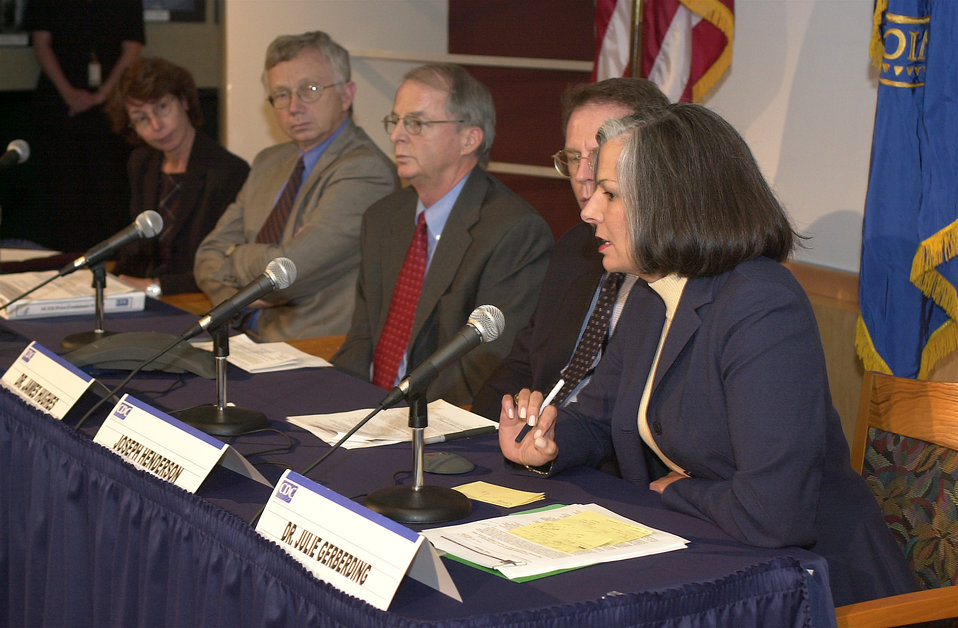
Centers for Disease Control and Prevention Bioterrorism Preparedness Press Briefing, August 27, 2002.